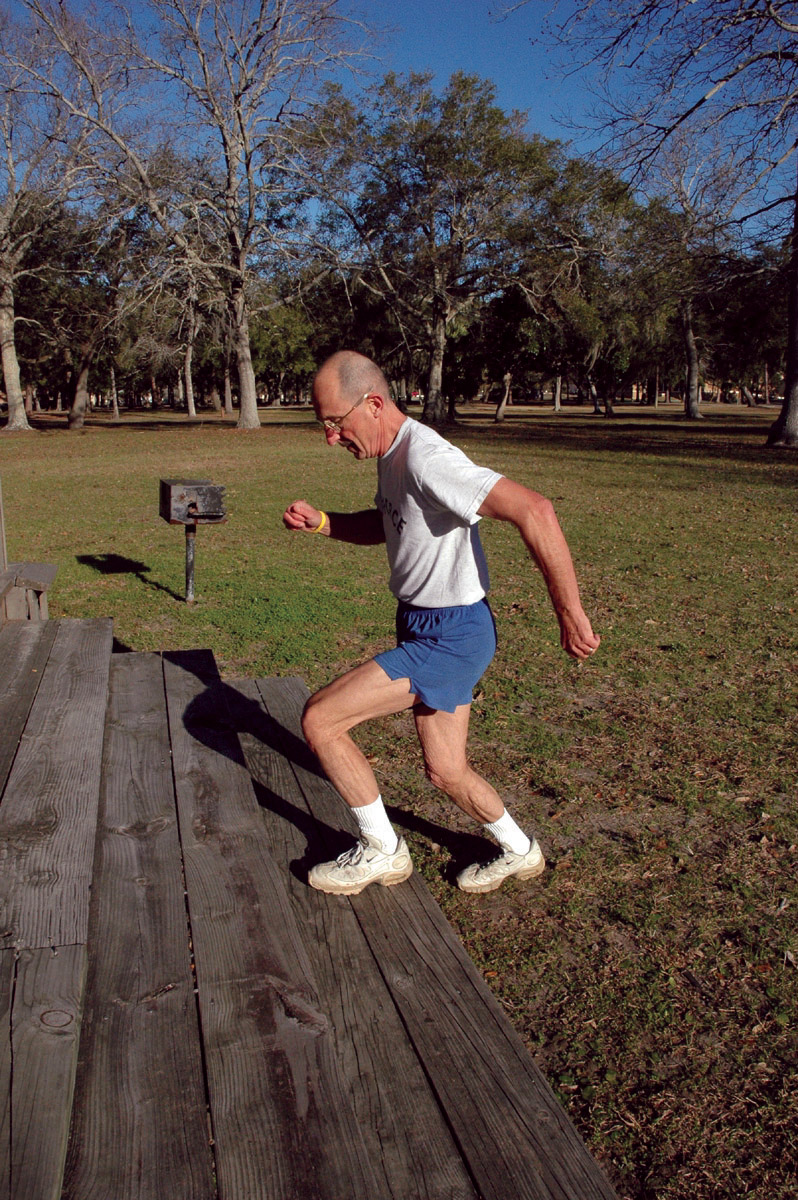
66-year-old officer aces annual fitness test

Lt. Col. (Dr.) Daniel Kulund trains at Tyndall Air Force Base, Fla. Colonel Kulund is a fitness and wellness advocate and chief of medicine at the Tyndall medical clinic. The 66-year-old Air Force officer got a perfect score on his annual military physical fitness test for the second year in a row.